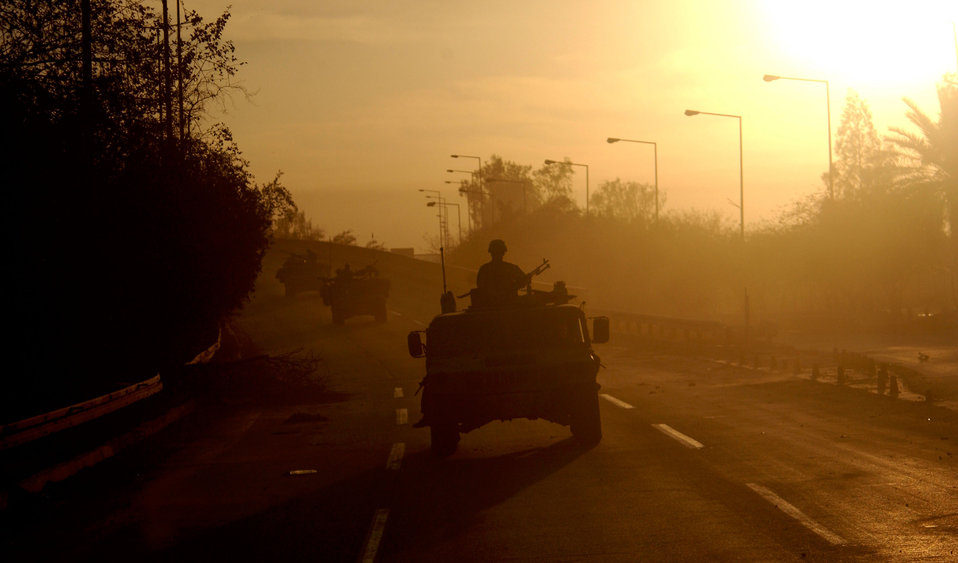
Perimeter security

OPERATION IRAQI FREEDOM -- A Special Operations Forces High Mobility Multi-Purpose Wheeled Vehicle (HUMVEE) moves through Western Baghdad, April 12. Special Operations Forces are patrolling the outer perimeter to provide security for a local hospital in support of Operation Iraqi Freedom.